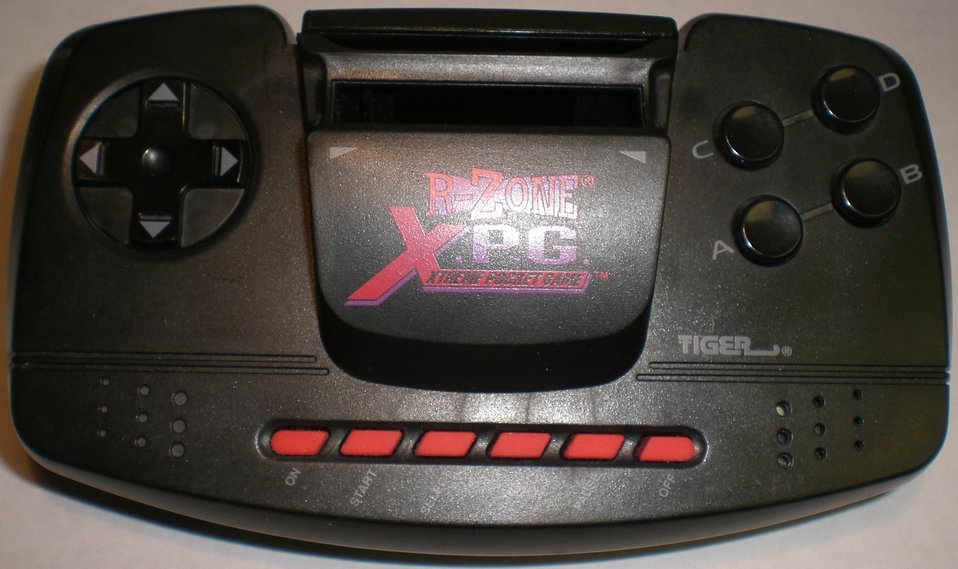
Alex Kirkland, bobbygeorgina.com, available for use by anyone desiring to do so,